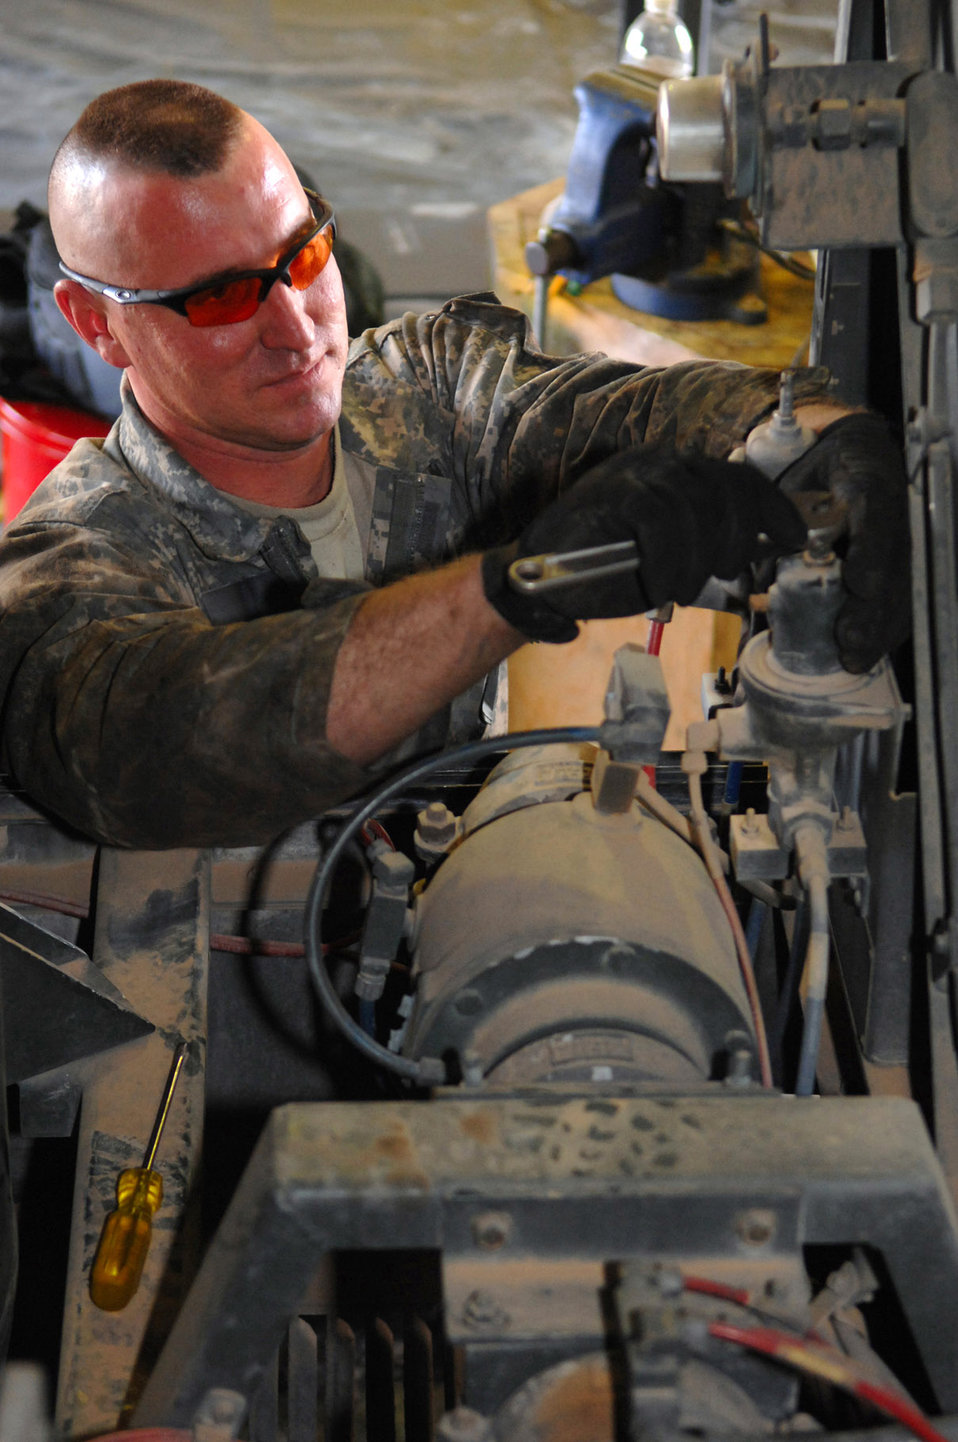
Keeping them rolling

Staff Sgt. Jason Jablonowski adjusts the pilot flow pressure for aircraft fuel March 8 at Balad Air Base, Iraq. The pilot flow controls the rate at which fuel is pumped into an aircraft. Sergeant Jablonowski, a 332nd Expeditionary Logistics Readiness Squadron refueling truck mechanic, is deployed from Luke Air Force Base, Ariz.